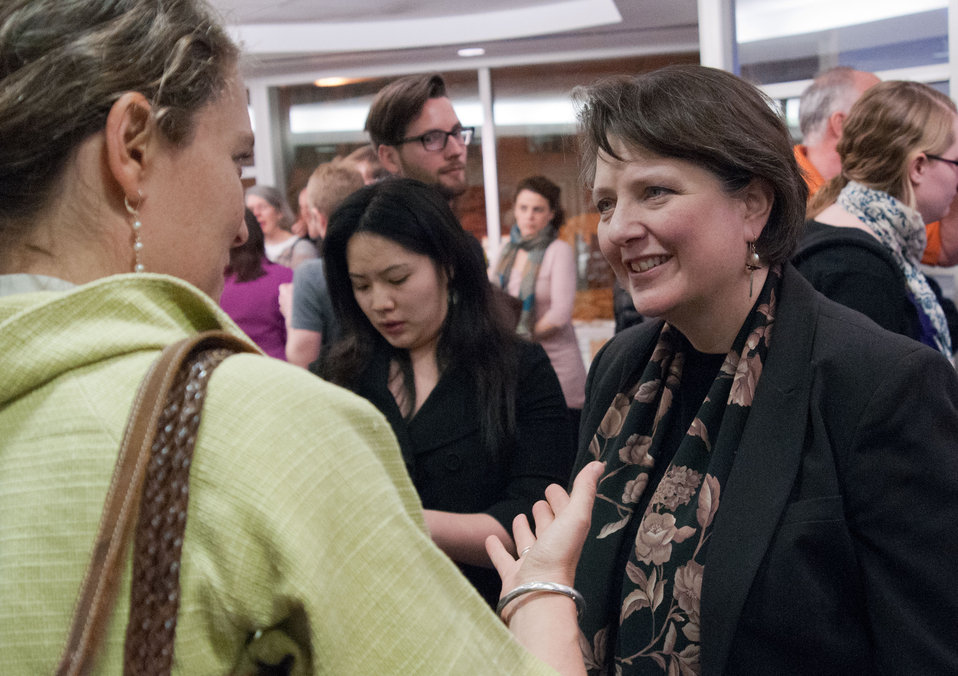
American University School of International Service Global Environment Politics Assistant Professor Garrett Graddy (left) talked with Agriculture Deputy Secretary Kathleen Merrigan (right), during the reception that followed the “Shaping the Farm Bill for a Sustainable Future” Forum in the Jack Morton Auditorium, at the Trachtenberg School of Public Policy and Public Administration, on the George Washington University campus in Washington, D.C., on Thursday, March 1, 2012.